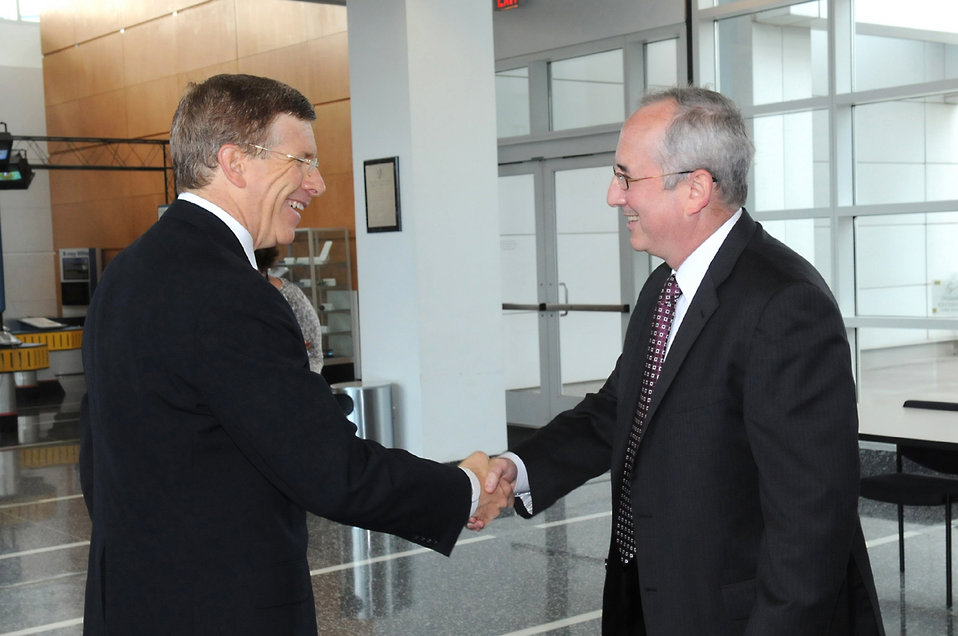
Introductions

Argonne Director, Eric Isaacs, greets Deputy Secretary of Energy Daniel Poneman on his visit to Argonne National Laboratory